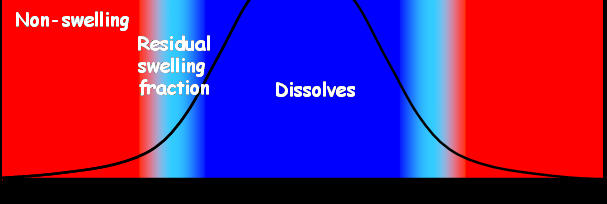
Photolithography Process

Schematic of the photolithography process shows the formation of a gradient extending from the photoresist material to be removed (center) into the unexposed portions of the resist on the sides. NIST measurements document the residual swelling fraction caused by the developer that can contribute to roughness in the final developed image.